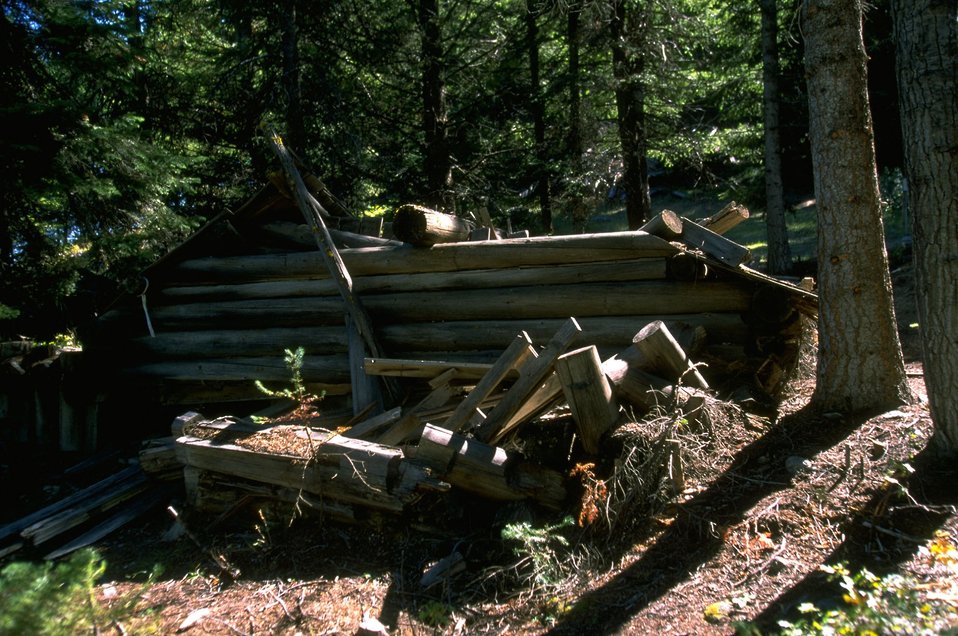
Dilapidated cabing in Coloma Ghost Town